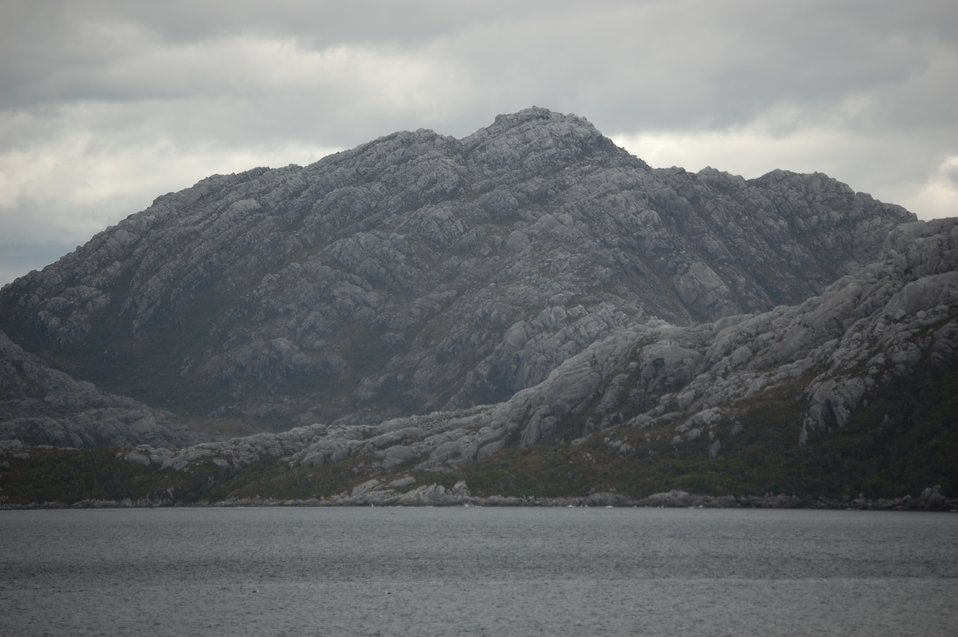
Weathered rock formations showing jointing patterns.